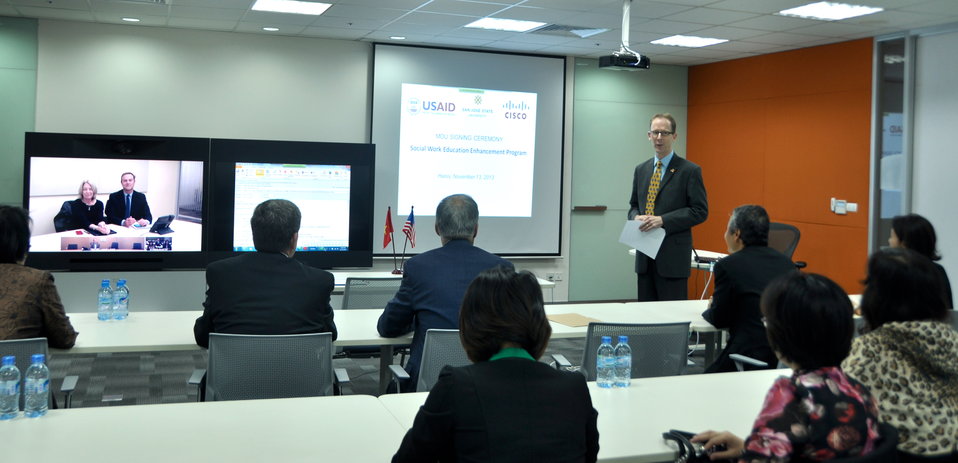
USAID Mission Director Joakim Parker speaks at the MOU signing ceremony.

Hanoi, November 13, 2013.